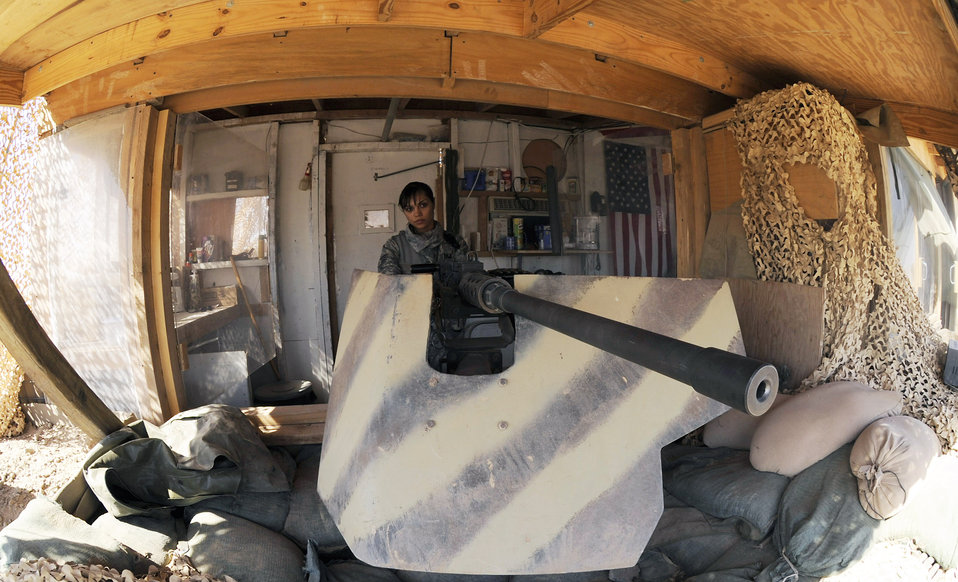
Airmen provide show of force

Senior Airman Elizabeth Gonzalez, looks over the flightline at Sather Air Base, Iraq, with the .50 caliber machine gun March 26. Airman Gonzalez provides [a]show of force for the base making sure that no unauthorized personnel are allowed on the base. Airman Gonzalez is one of a few security forces members qualified on the .50 cal here. Airman Gonzalez is a 447th Expeditionary Security Forces Squadron heavy weapons operator.